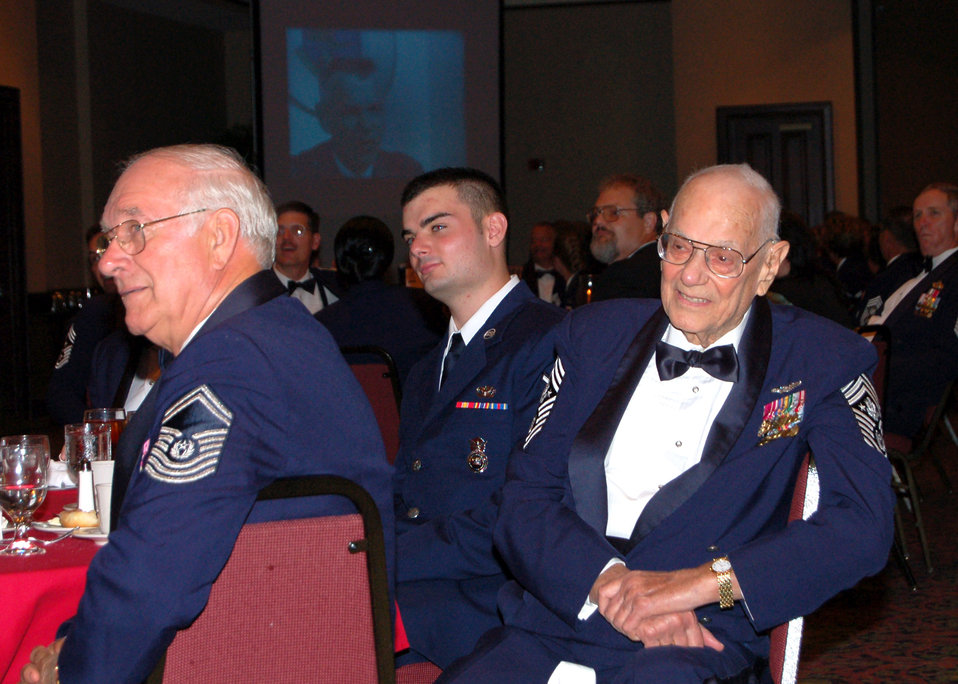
Airmen recognize impact of enlisted heritage

The first Chief Master Sgt. of the Air Force Paul Wesley Airey (right) watches a video in his honor during the Senior Enlisted Leaders Conference Heritage Dinner July 26 in Montgomery, Ala. The eighth Chief Master Sgt. of the Air Force Sam Parish (left) is beside him.